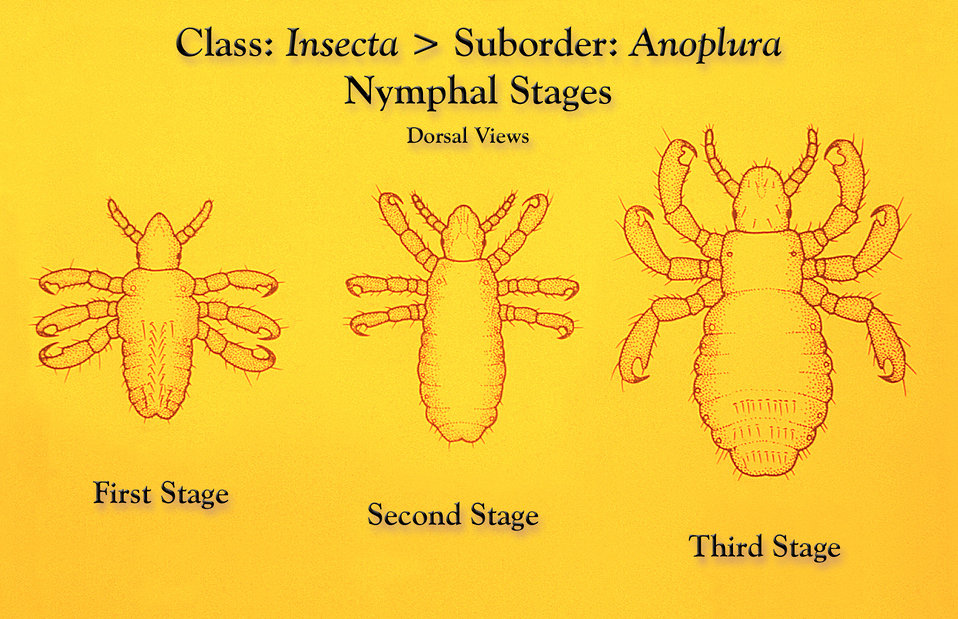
This illustration depicts the three nymphal stages through which a typical louse passes on its way to becoming an adult insect.